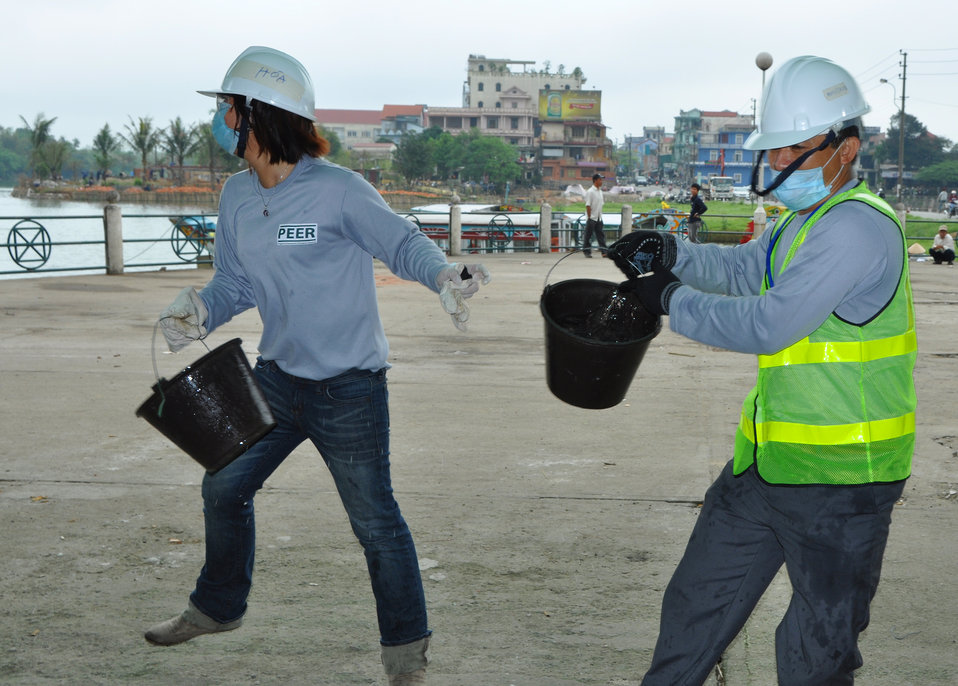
Disaster and Emergency Training Funded by USAID in Hue, Vietnam